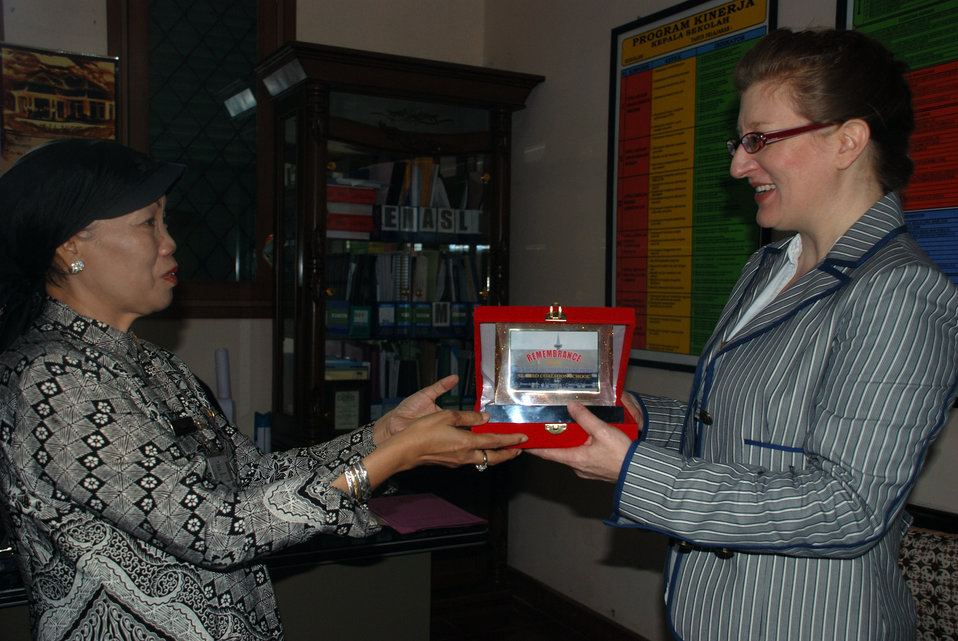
Behind the Scenes: Preparing for Secretary Clinton's Indonesia Visit

Principal Hasimah of Menteng Elementary School No. 1 practices presenting a plaque to U.S. Secretary of State Hillary Rodham Clinton with U.S. Embassy Official Michele Cenzer in Jarkarta, Indonesia during the visit of Secretary Clinton's February 18, 2009.